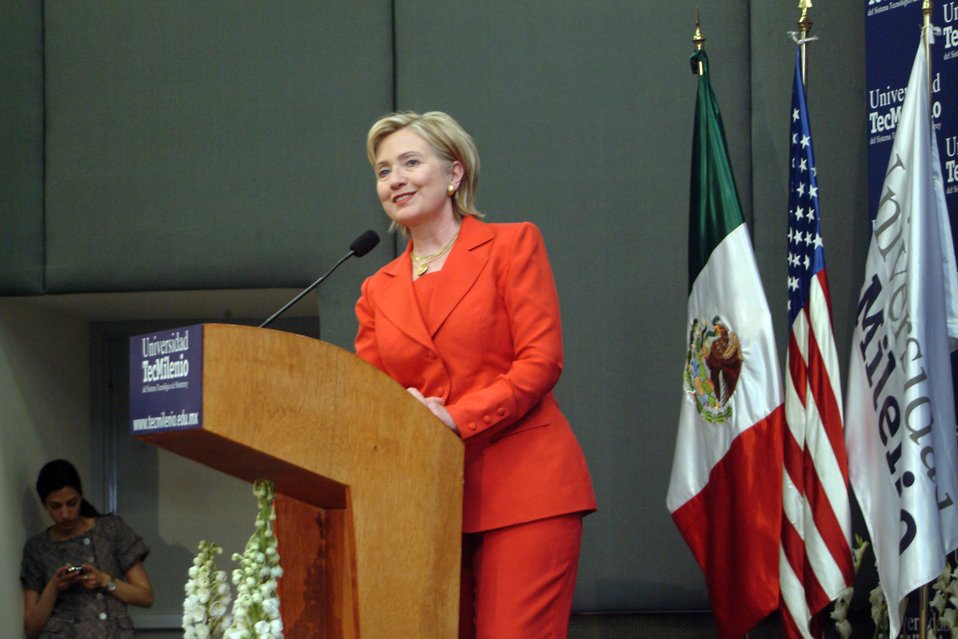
Secretary Clinton at TecMilenio University

U.S. Secretary of State Hillary Rodham Clinton answers students' questions during a town hall meeting at Tecmilenio University in Monterrey, Mexico March 26, 2009.